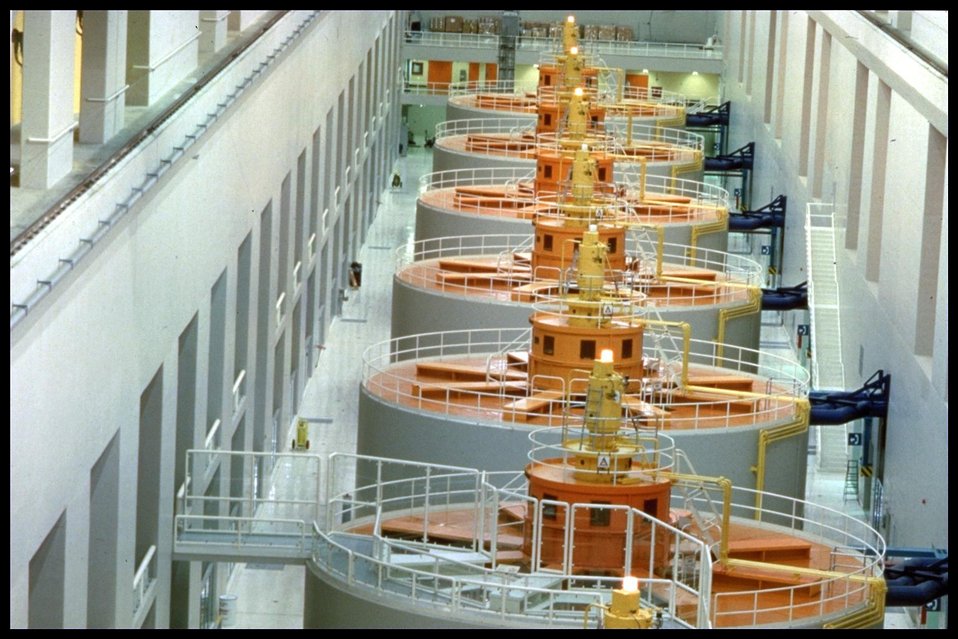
THE BONNEVILLE DAM POWER HOUSE GENERATORS.

THE BONNEVILLE POWER ADMINISTRATION IS A FEDERAL AGENCY THAT MARKETS AND DELIVERS MORE THAN HALF THE PACIFIC NORTHWEST'S ELECTRICITY AND MAINTAINS A NETWORK OF MORE THAN 12,300 MILES OF TRANSMISSION LINES.